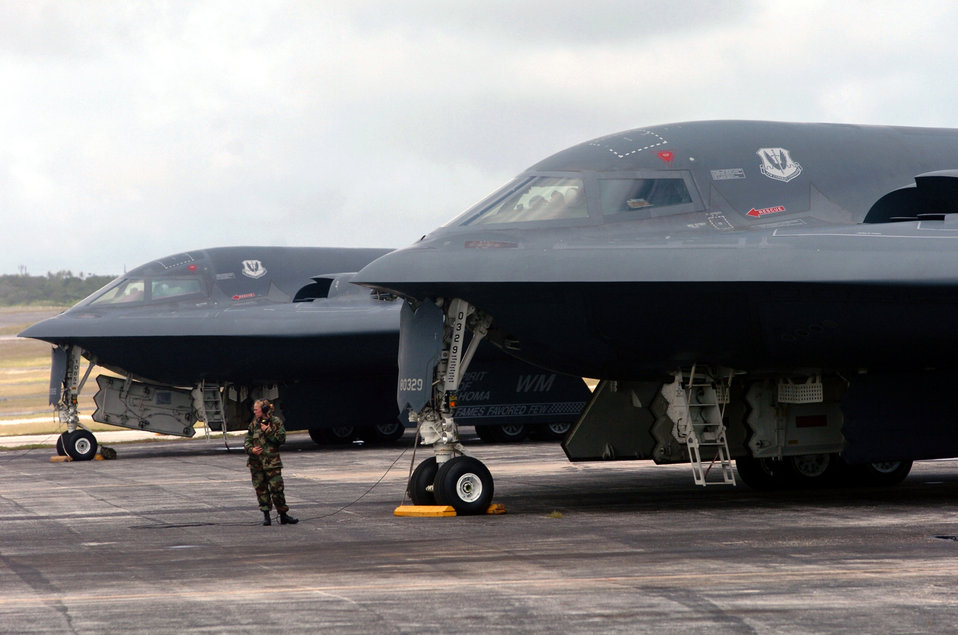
Airmen help improve B-2 aircraft maintenance in Guam

Senior Airman Mindy High prepares to launch a B-2 Spirit bomber during a mission at Andersen Air Force Base, Guam. The B-2s deployed to Andersen AFB Feb. 25 to provide U.S. Pacific Command officials a continuous bomber presence in the Asia-Pacific region, enhancing regional security and the U.S. commitment to the Western Pacific. Bomber aircraft have had an ongoing presence on the island since February 2004. Airman High is a crew chief from the 509th Bomb Wing at Whiteman Air Force Base, Mo.